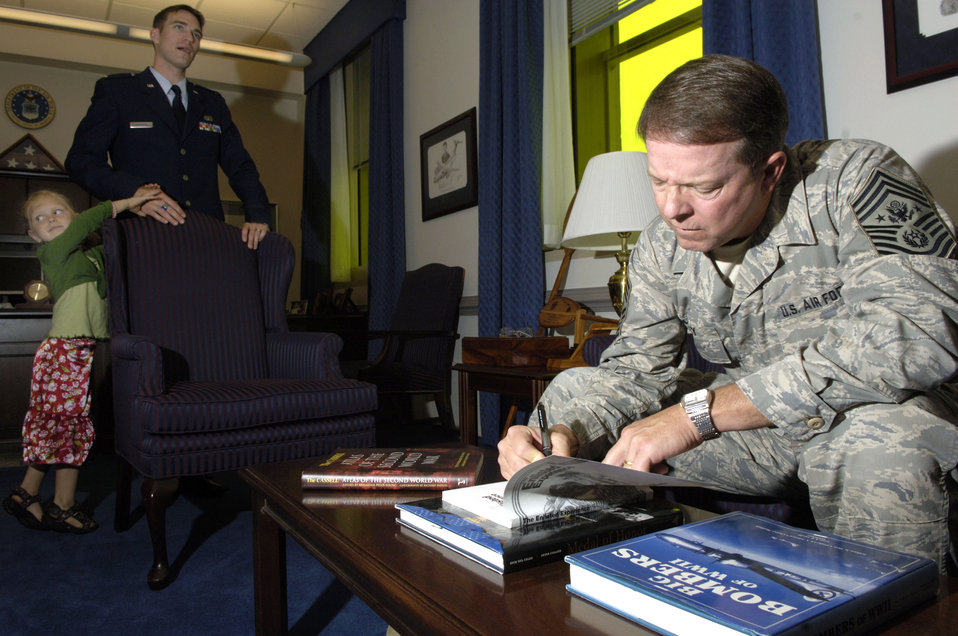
CMSAF: We can all learn from each other

Second Lt. Paul Griffith and his daughter, Emily, stand by as Chief Master Sgt. of the Air Force Rodney J. McKinley signs the book,